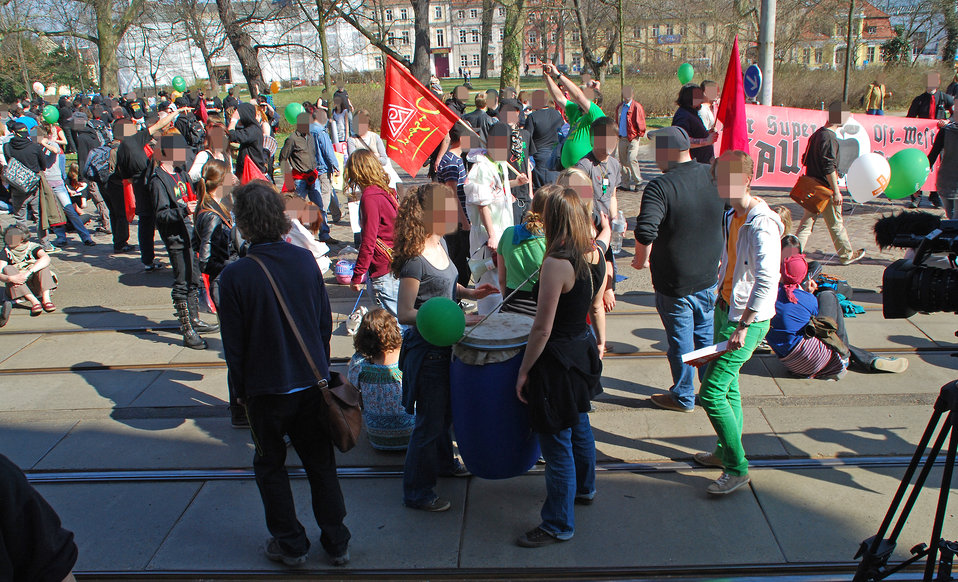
Proteste gegen den Nazi-Aufmarsch am 24.3.2012 in Frankfurt (Oder)